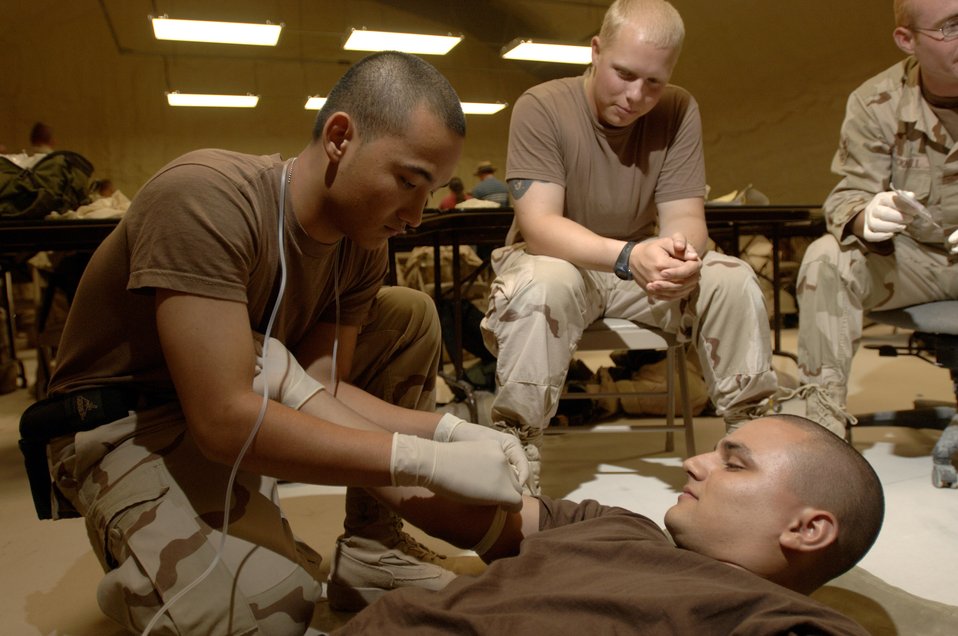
Convoy course training

SAN ANTONIO -- Airman 1st Class Chantana Sine (left) gives an IV to classmate Senior Airman Jesus Venugas during a basic combat convoy course. The course is designed to train transportation Airmen in basic combat skills required to integrate with joint forces in hostile convoy operations. Airmen receive about 300 hours of training at nearby Camp Bullis to prepare them for security escort and line haul missions with coalition convoys supporting Operation Iraqi Freedom. The Airmen are from the 4th Logistics Readiness Squadron at Seymour Johnson Air Force Base, N.C.